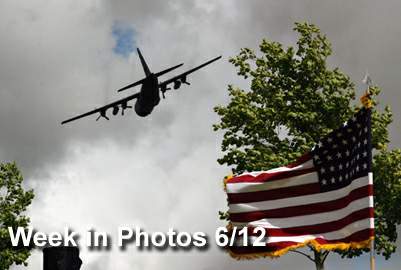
Air Force Week in Photos for June 12 highlights photos from around the Air Force. In this photo, a C-130 Hercules flies over the Iron Mike memorial at La Fierre, France.